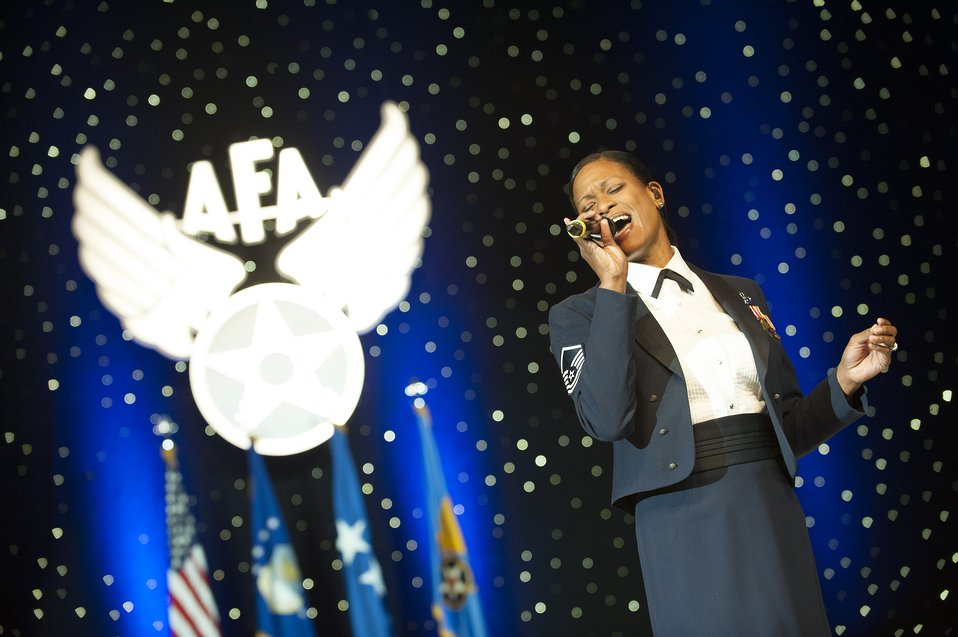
Air Force recognizes 2012 Outstanding Airmen of the Year

The Air Force Band's Master Sgt. Shanie Pruitt performs during the 12 Outstanding Airmen of the Year reception and awards dinner as part of the 2012 Air Force Association's Air and Space Conference and Technology Exposition in Washington, D.C., Sept. 17, 2012.